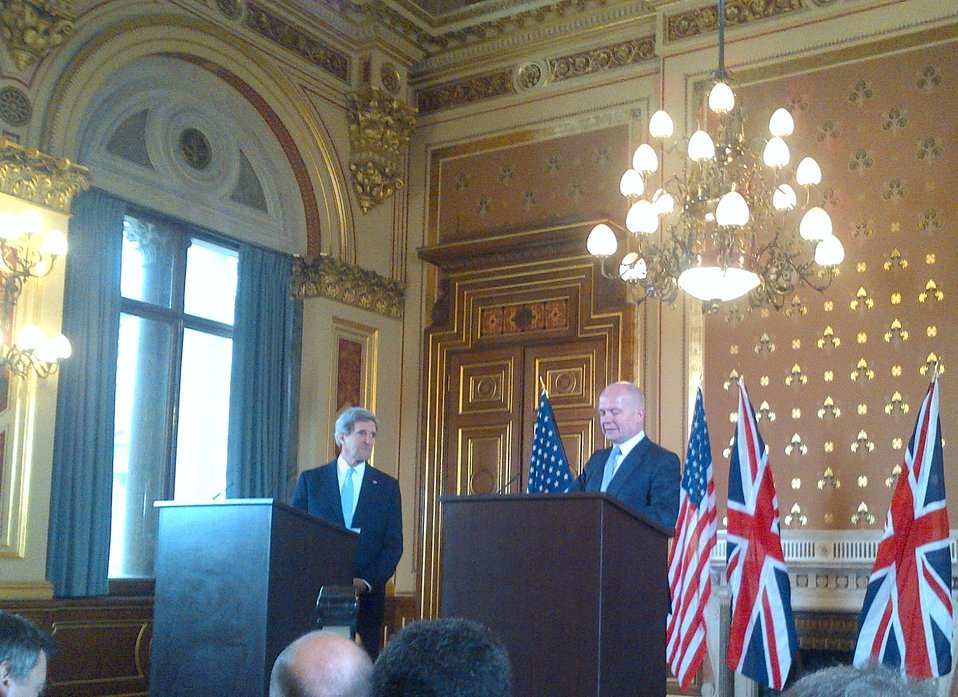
Secretary Kerry and UK Foreign Secretary Hague Address Reporters

U.S. Secretary of State John Kerry and UK Foreign Secretary William Hague address reporters at a joint press availability following their meetings at the Foreign and Commonwealth Office in London, UK on February 25, 2013.